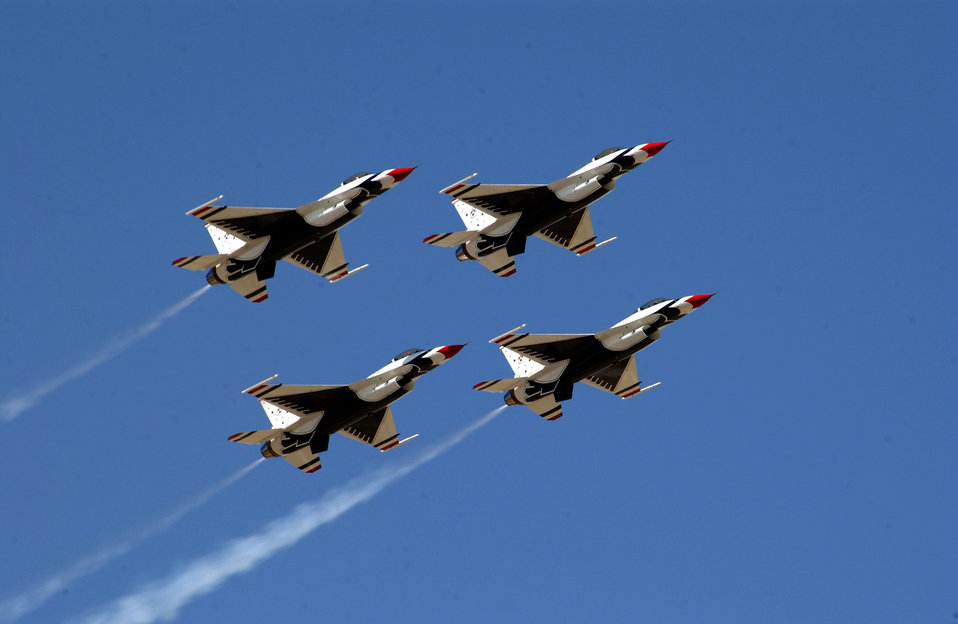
Thunderbird diamond

OVER MARCH AIR RESERVE BASE, Calif. -- Four F-16 Fighting Falcons from the U.S. Air Force Thunderbirds flight demonstration team fly in diamond formation during Airfest 2004 here April 24. The F-16s are assigned to the U.S. Air Force Air Demonstration Squadron at Nellis Air Force Base, Nev.